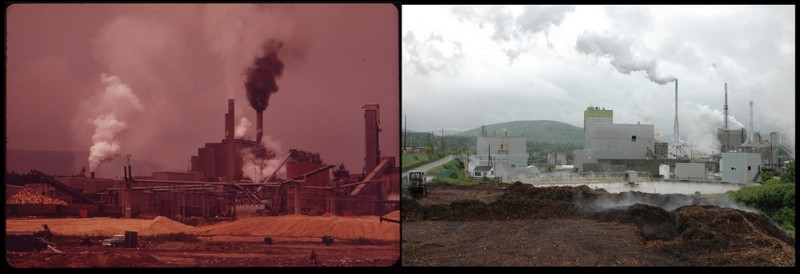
Jay, ME 1973 and 2012

'Then' Documerica Photo: June, 1973 International Paper Company Mill at Jay on the Androscoggin River 06/1973 by Charles Steinhacker.

June, 2012 photograph by Victoria Hampshire.

Join the project at www.flickr.com/groups/ourenvironment